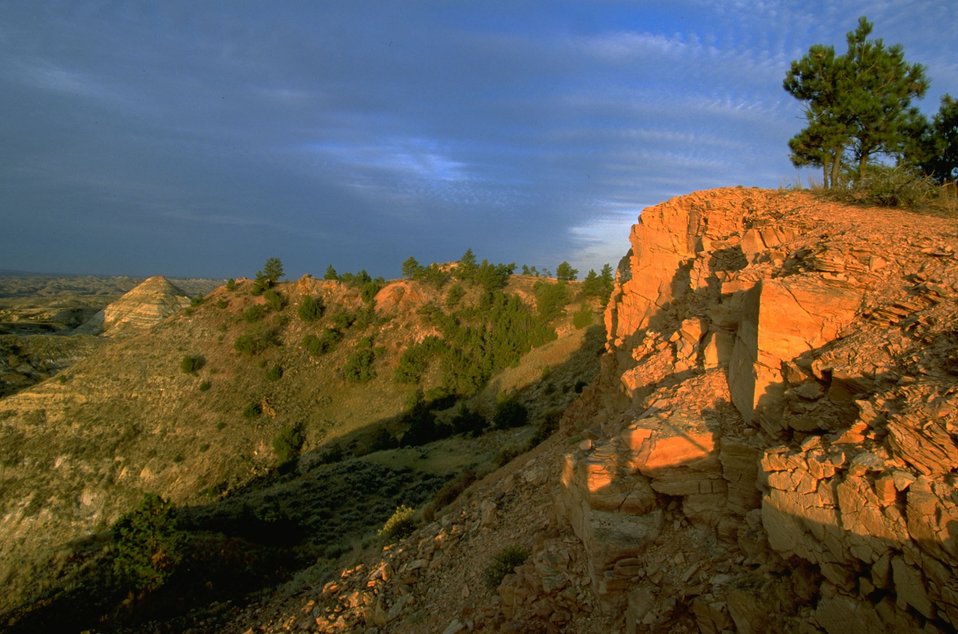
Sun shining on a a cliff in the Terry Badlands